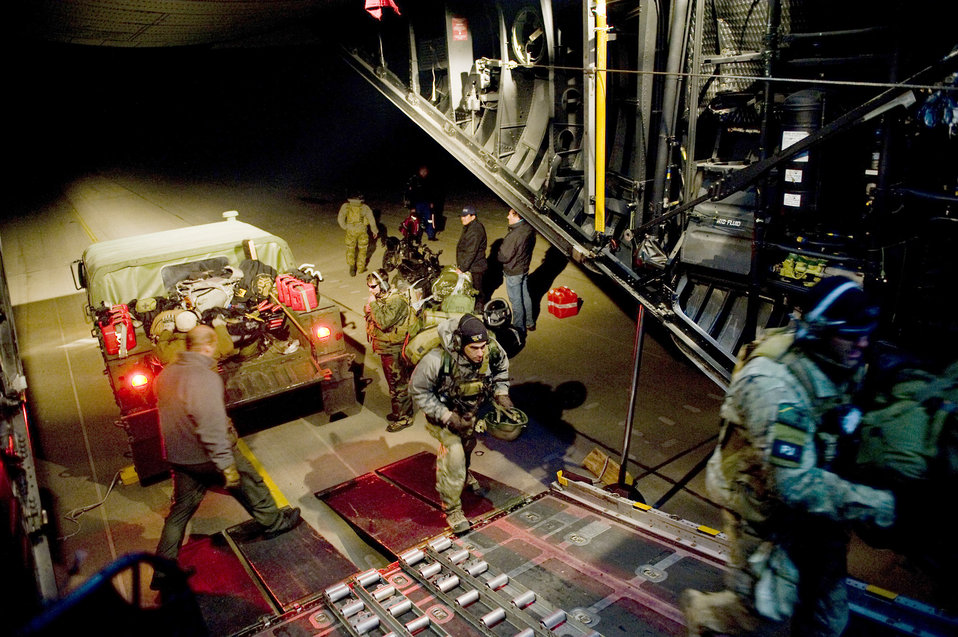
Standing up at Sendai airport

Members from the 320th Special Tactics Squadron download and upload equipment March 16, 2011, at Sendai airport in Japan. The crew brought water, food, fuel and other general supplies to 353rd Special Operations Group members who are conducting search and rescue missions from the airport. The Airmen are establishing a usable runway at Sendai Airport to help with Japan's earthquake and tsunami relief.